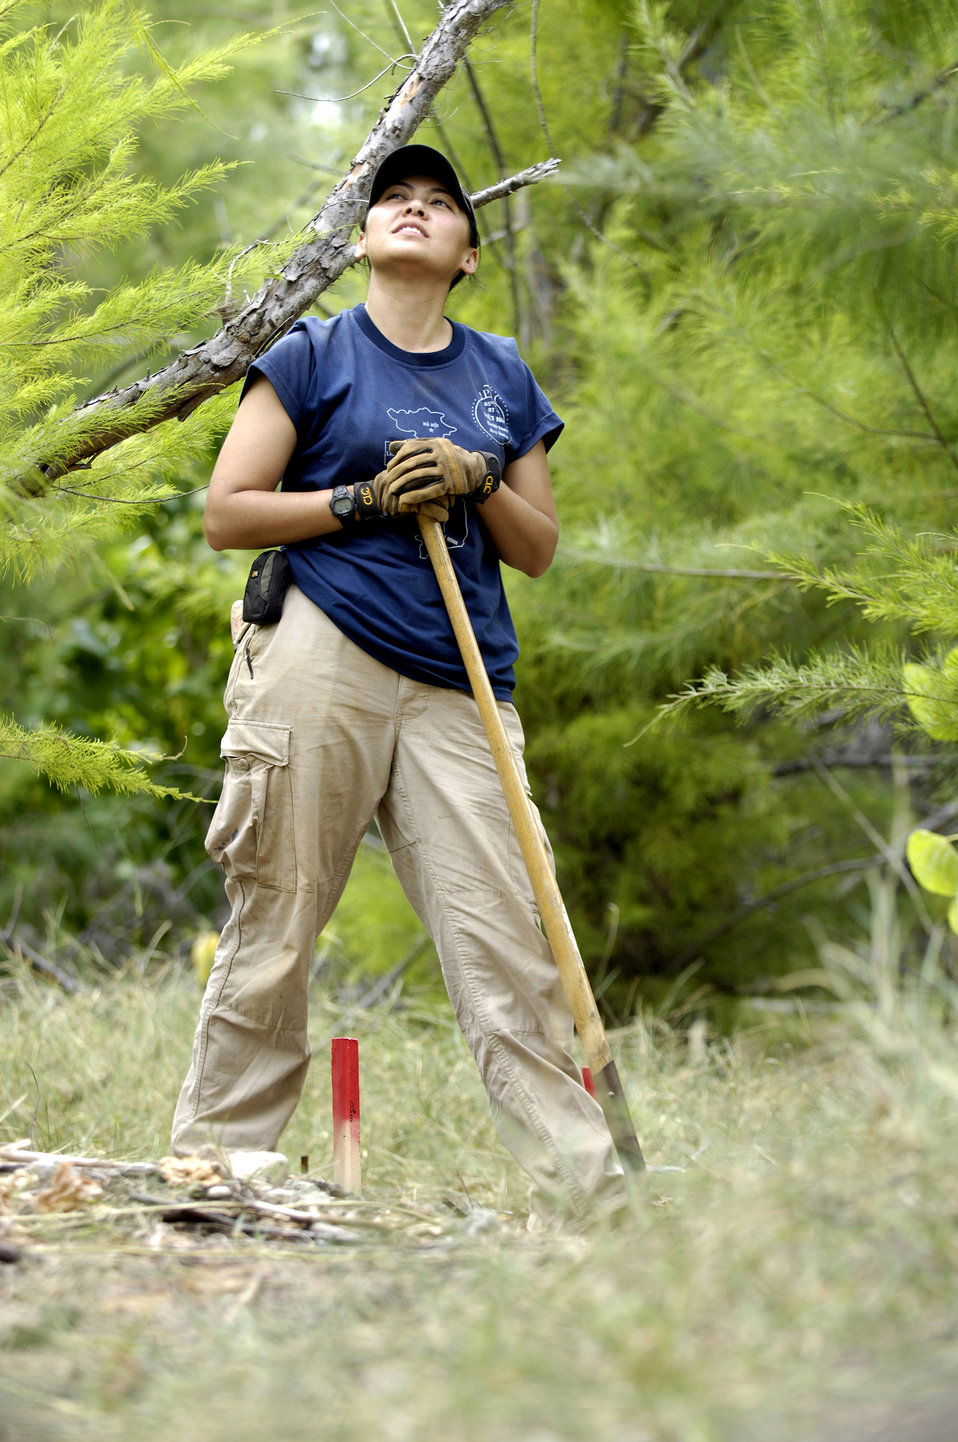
Servicemembers search for POW/MIAs on Wake Island

Denise To takes a break from excavating a dig site Jan. 12 on Wake Island. Ms. To, a forensic anthropologist, was sent to do a site survey after Wake Island officials notified the Joint POW/MIA Accounting Command of bones located on the island. JPAC officials are charged with achieving the fullest possible accounting of all Americans missing as a result of past conflicts.